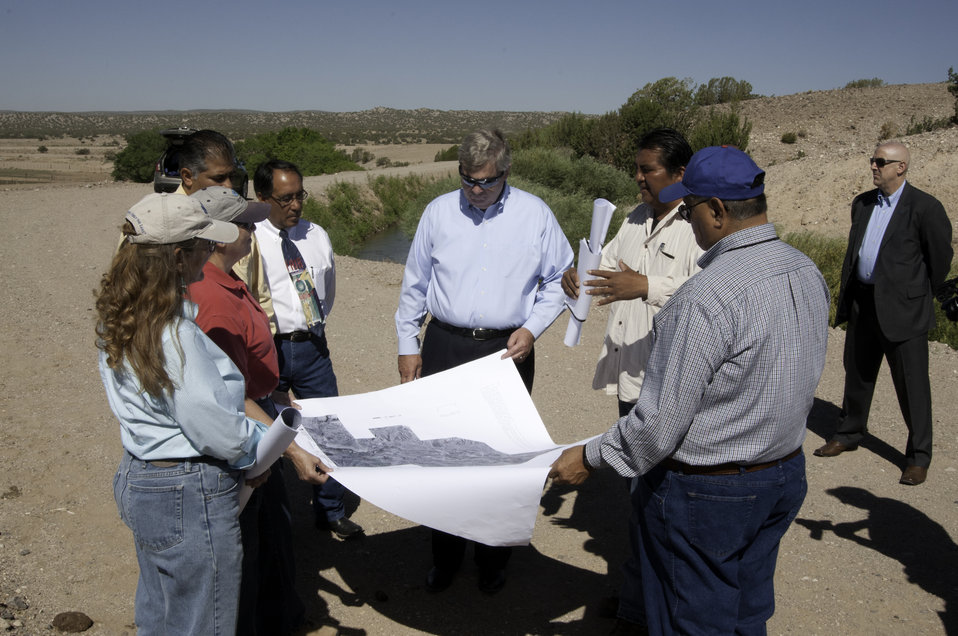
Agriculture Secretary Tom Vilsack meets with New Mexico producers and community stakeholders to highlight the U.S. Department of Agriculture’s (USDA) StrikeForce Initiative opportunities and the importance of comprehensive immigration reform in Albuquerque, NM on Thursday, Jun. 20, 2013.